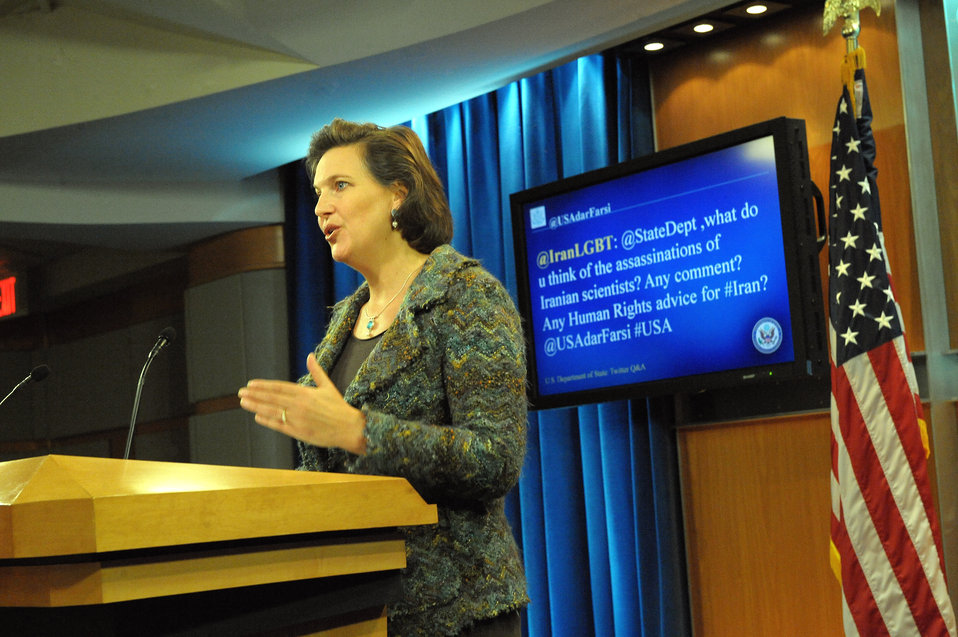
Spokesperson Nuland Responds to a Question from @USAdarFarsi

Victoria Nuland, Spokesperson for the U.S. Department of State, answers a question selected from the Department’s official Farsi Twitter feed, @USAdarFarsi, on January 13, 2012.